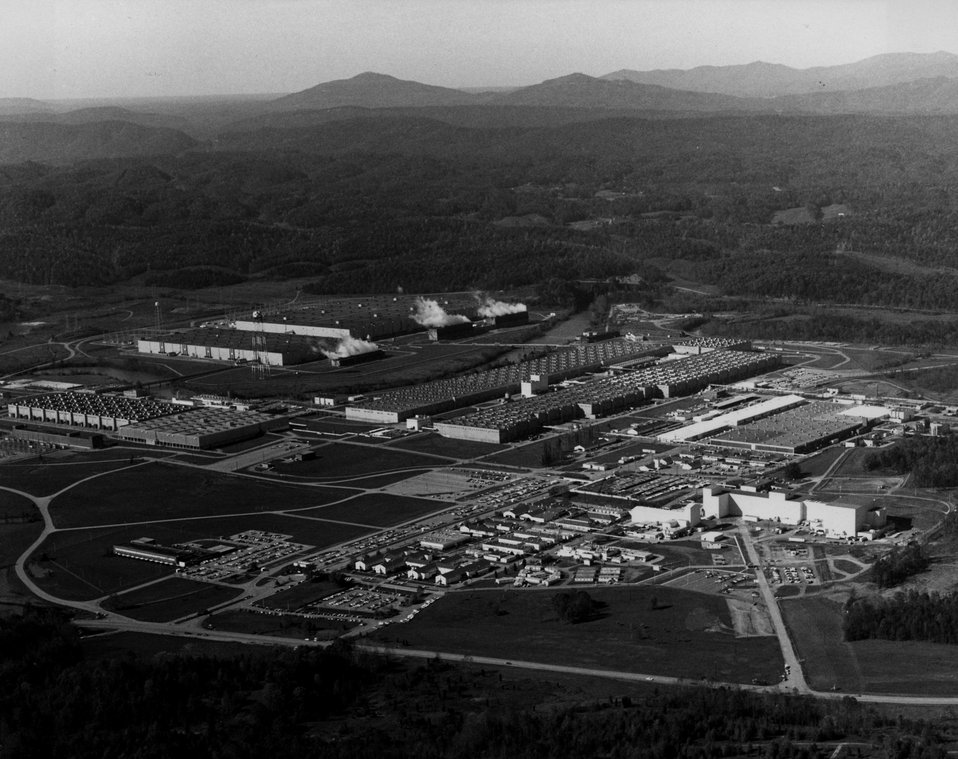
The Energy Research and Development Administration's Oak Ridge (Tenn.) Gaseous Diffusion Plant is the first such facility built in the wold for production of enriched uranium. The original gaseous diffusion process building 'K-25,' which is the U-shaped building, was constructed in 1943 and began operating in 1945, producing enriched uranium for the Manhattan Project of World War II. c. 1976